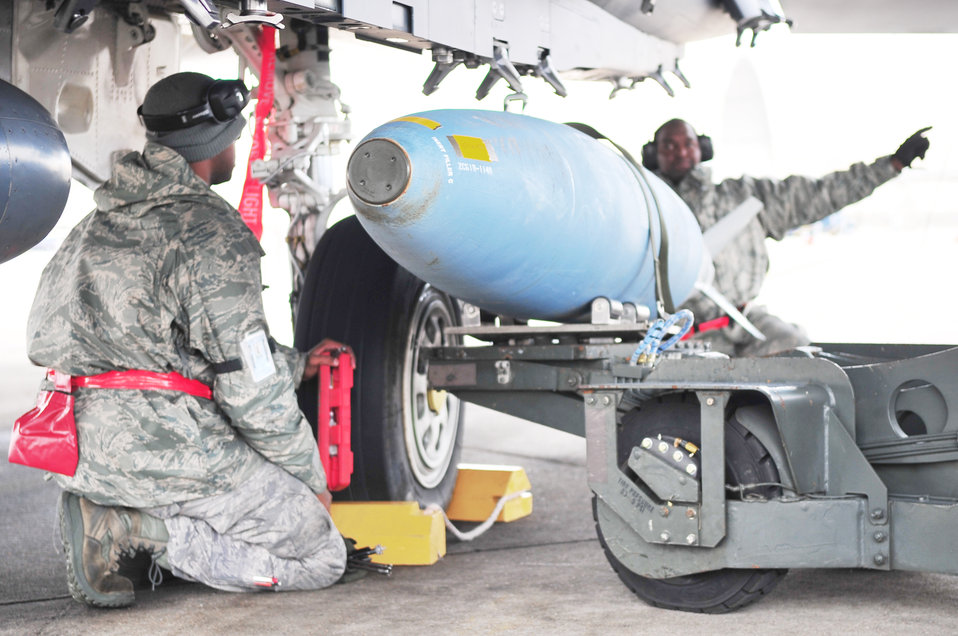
It's over there ...

Crew chiefs Senior Airman Durrell Hearns and Staff Sgt. Rafael Cratch guide the weapon loading vehicle under the wing of an F-15E Strike Eagle during an operational readiness exercise, Dec. 8, 2009, at Shaw Air Force Base, S.C. The weapons loading vehicle can raise, lower and rotate the munitions to load it onto the jet. The Airmen are assigned to the 4th Aircraft Maintenance Squadron.